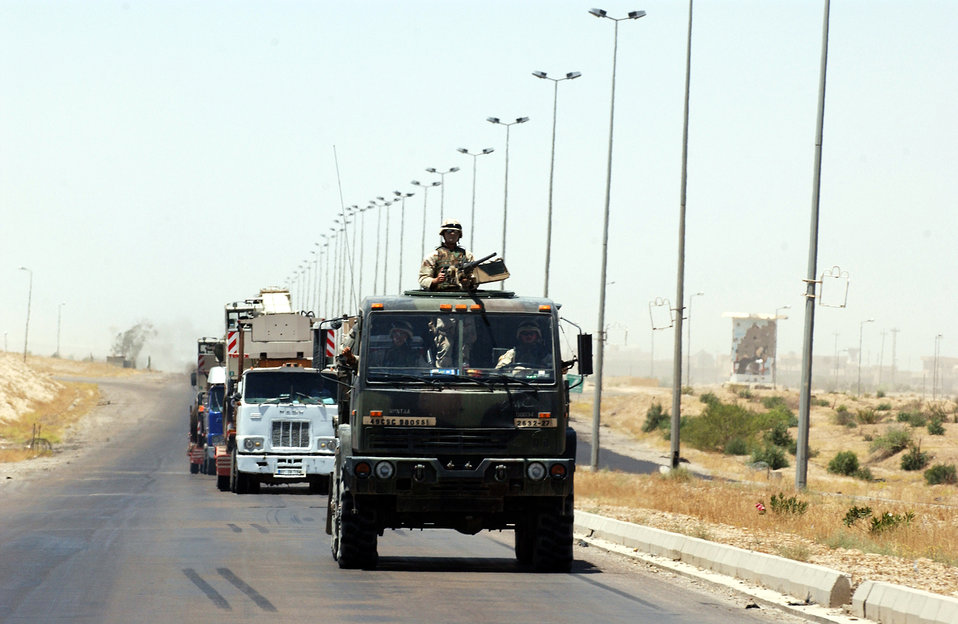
Course trains Airmen to drive for Army in Iraq

IRAQ -- A gun truck from the 2632nd Air Expeditionary Force Transportation Company moves along the main supply route from Baghdad to Tikrit with a 67-vehicle convoy in tow. The company's Airmen provide security to military and civilian convoys as they move supplies to multiple forward-operating bases throughout Iraq.